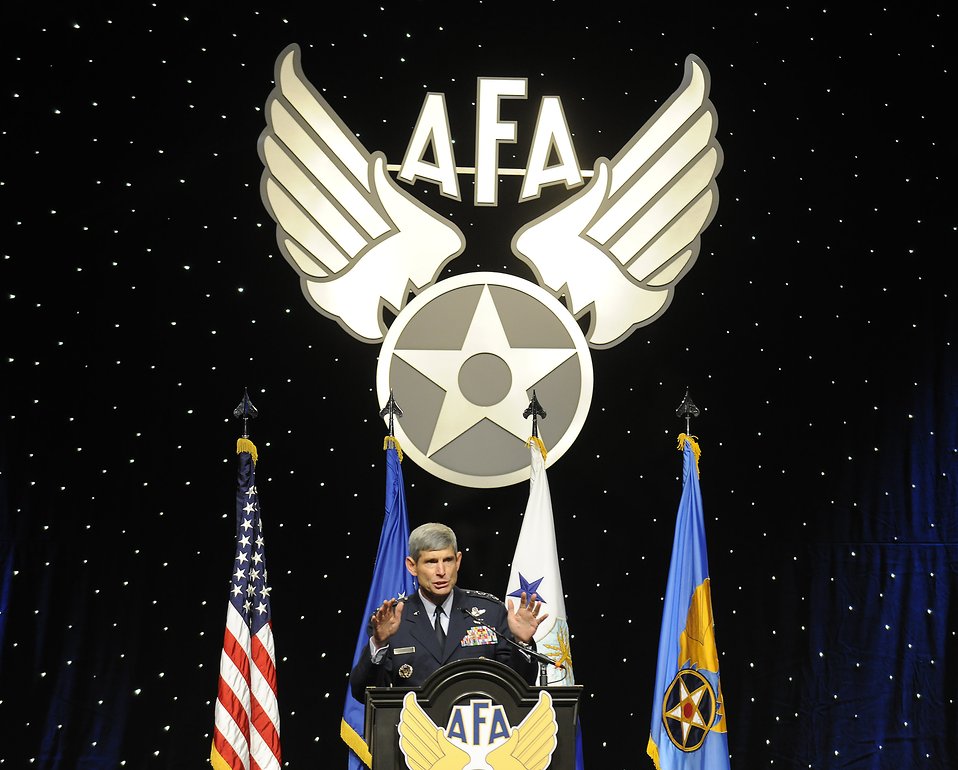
AFA

Air Force Chief of Staff Gen. Norton Schwartz delivers his keynote speech during the Air Force Association Air and Space Conference and Technology Exposition Sept. 15, 2009, at Oxon Hill, Md.